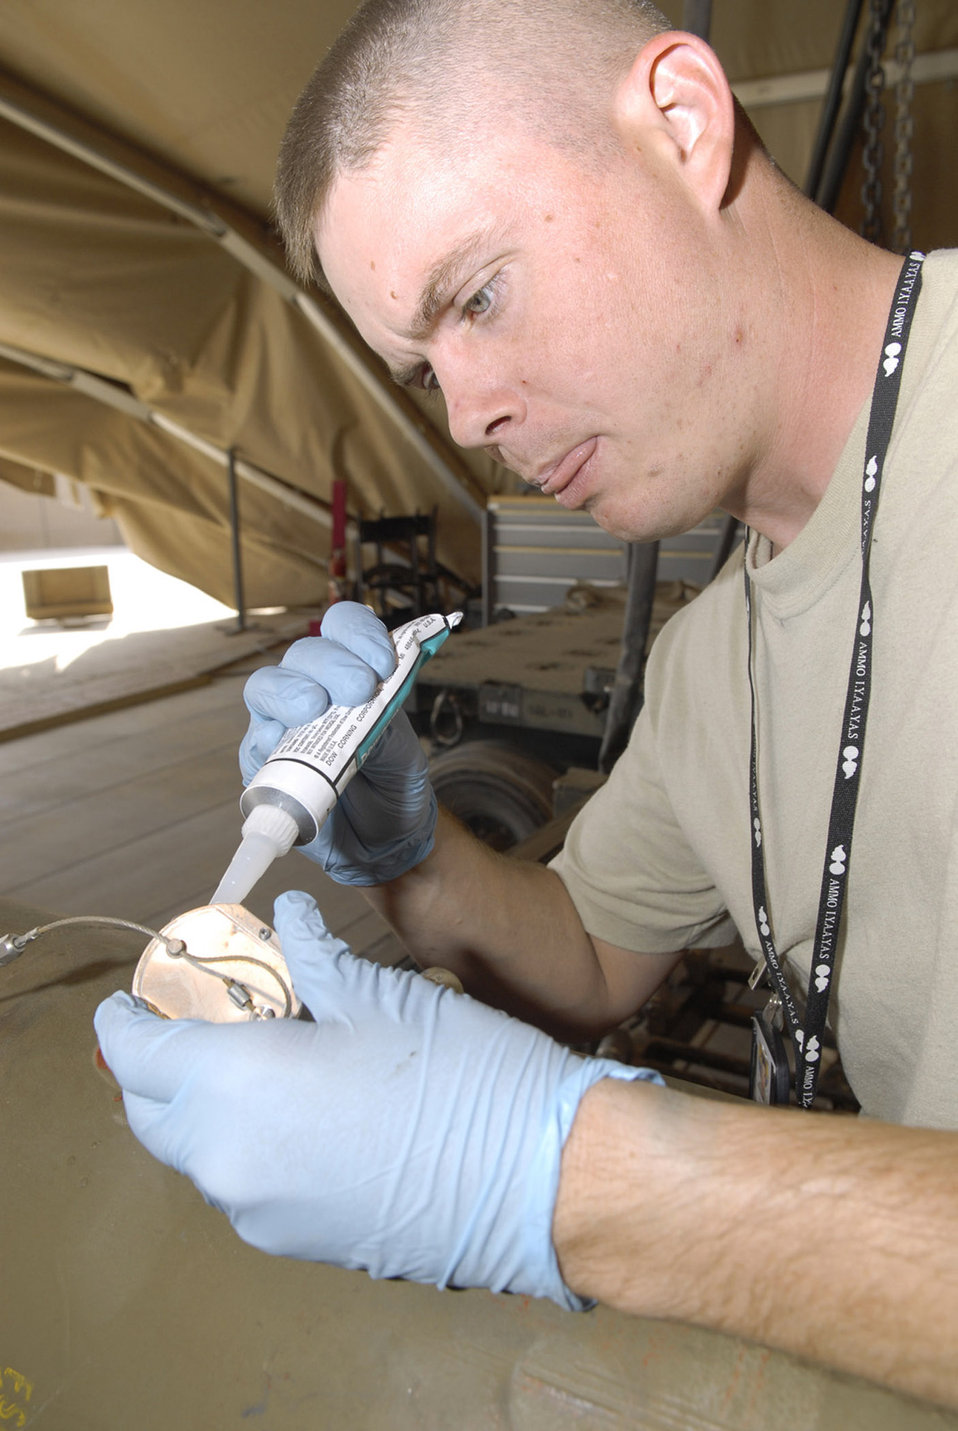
Bombs away

Staff Sgt. Zack Casagranda uses sealant compound as he builds a joint direct attack munition Oct. 15 at Balad Air Base, Iraq. The sealant prevents dirt from getting inside the bomb. Sergeant Casagranda's home station is Hill Air Force Base, Utah. He is assigned to the 332nd Expeditionary Maintenance Squadron.